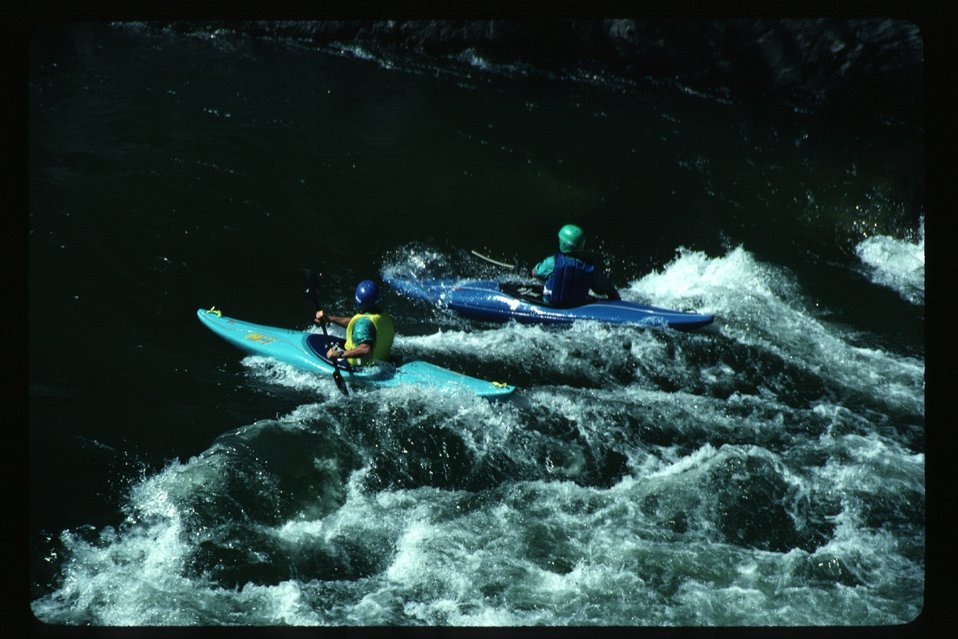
Kayaker in white water Kayaking Four Rivers Field Office LSRD Lower Snake River District